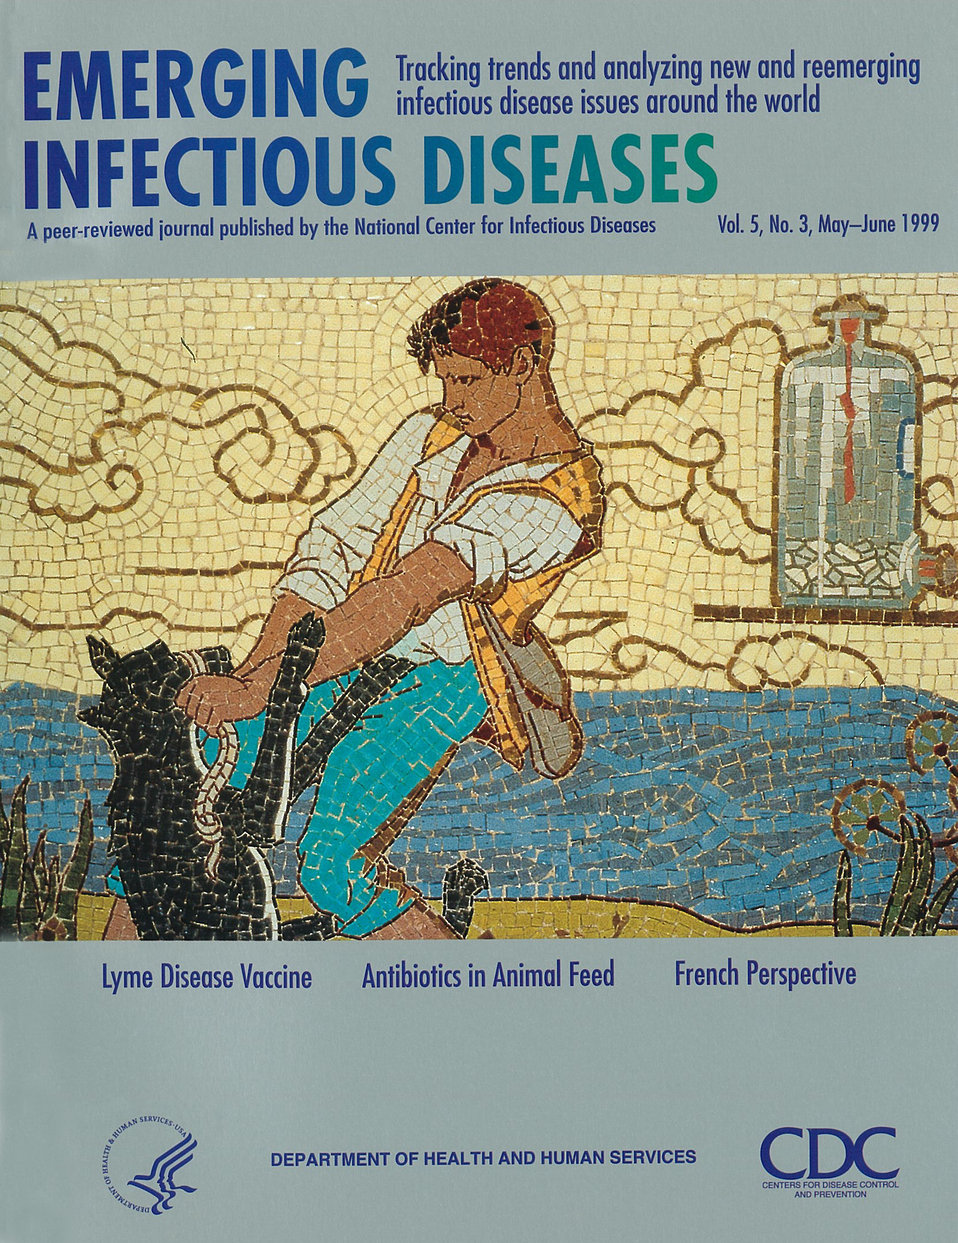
Emerging Infectious Diseases (EID) cover artwork for Volume 5, Number 3, May-June 1999 issue.